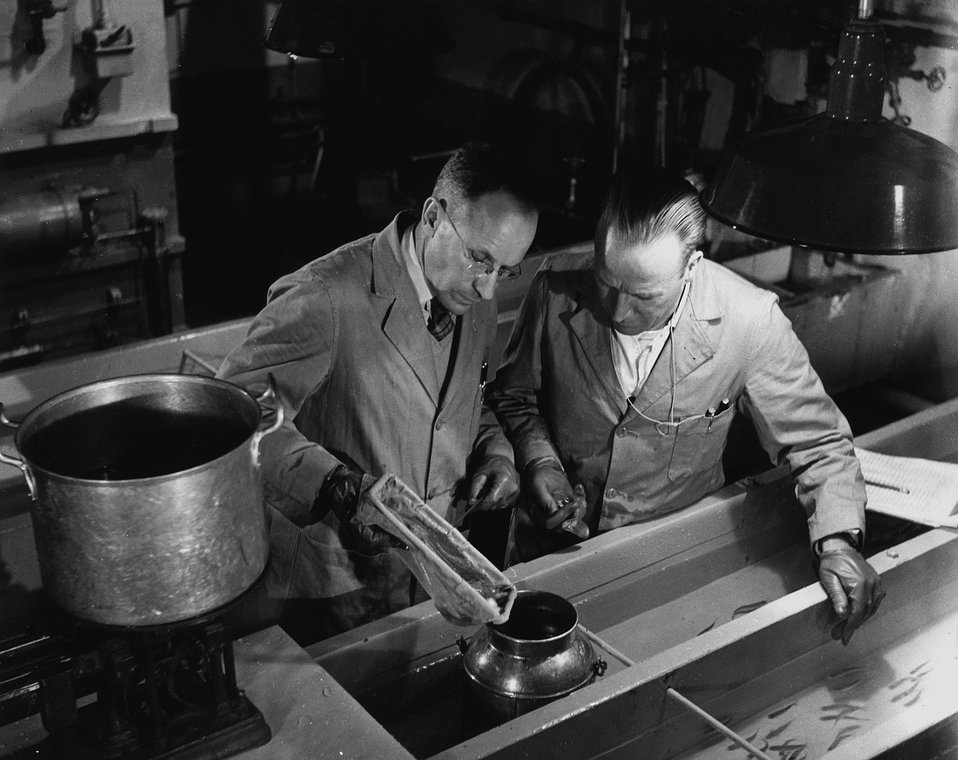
Columbia River water used to cool the plutonium-producing reactors at AEC's Hanford Works, near Richland, Washington. c. 1953